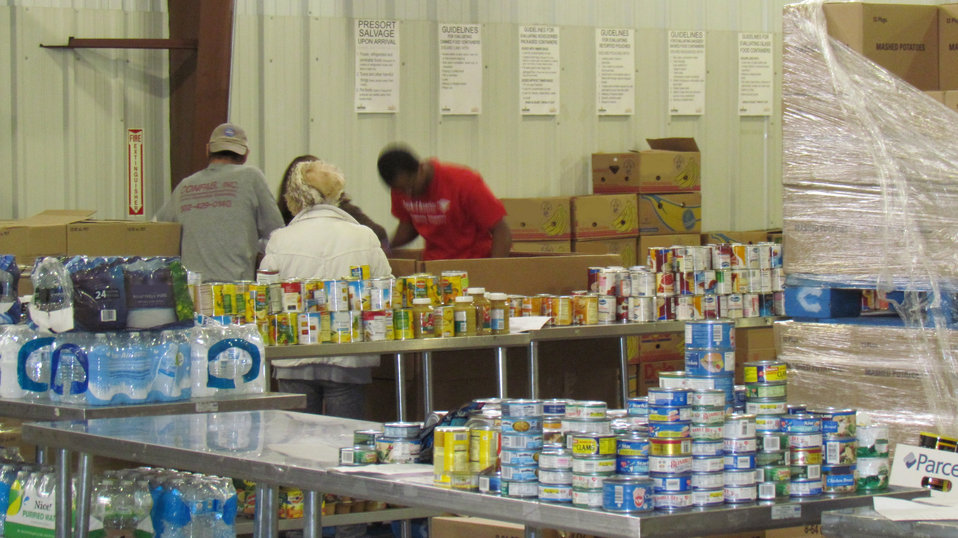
November 15, 2012 Volunteers at the Food Bank of Delaware sort through donations.

U.S. EPA Mid-Atlantic Regional Administrator Shawn M. Garvin welcomed Kenny Family ShopRites of Delaware to EPA’s Food Recovery Challenge.

Grocery stores often have food leftover that cannot be sold, but is still healthy to eat, such as pints with one bruised strawberry, or bakery items at the end of the night. The Kenny Family ShopRites are now donating to the Food Band of Delaware. This America Recycles Day event highlighted the new partnership. Today, more and more businesses are connecting with food rescue organizations to feed people instead of landfills.

You can donate your food too. The Bill Emerson Good Samaritan Act protects donors from liability if they follow food safety standards and donate in good faith.